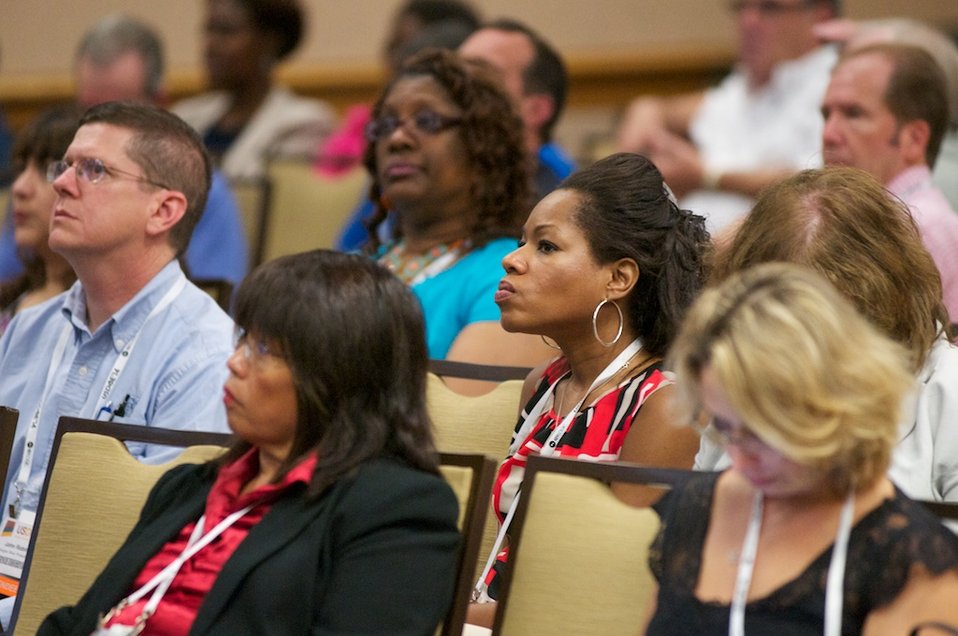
OSDBU Conf